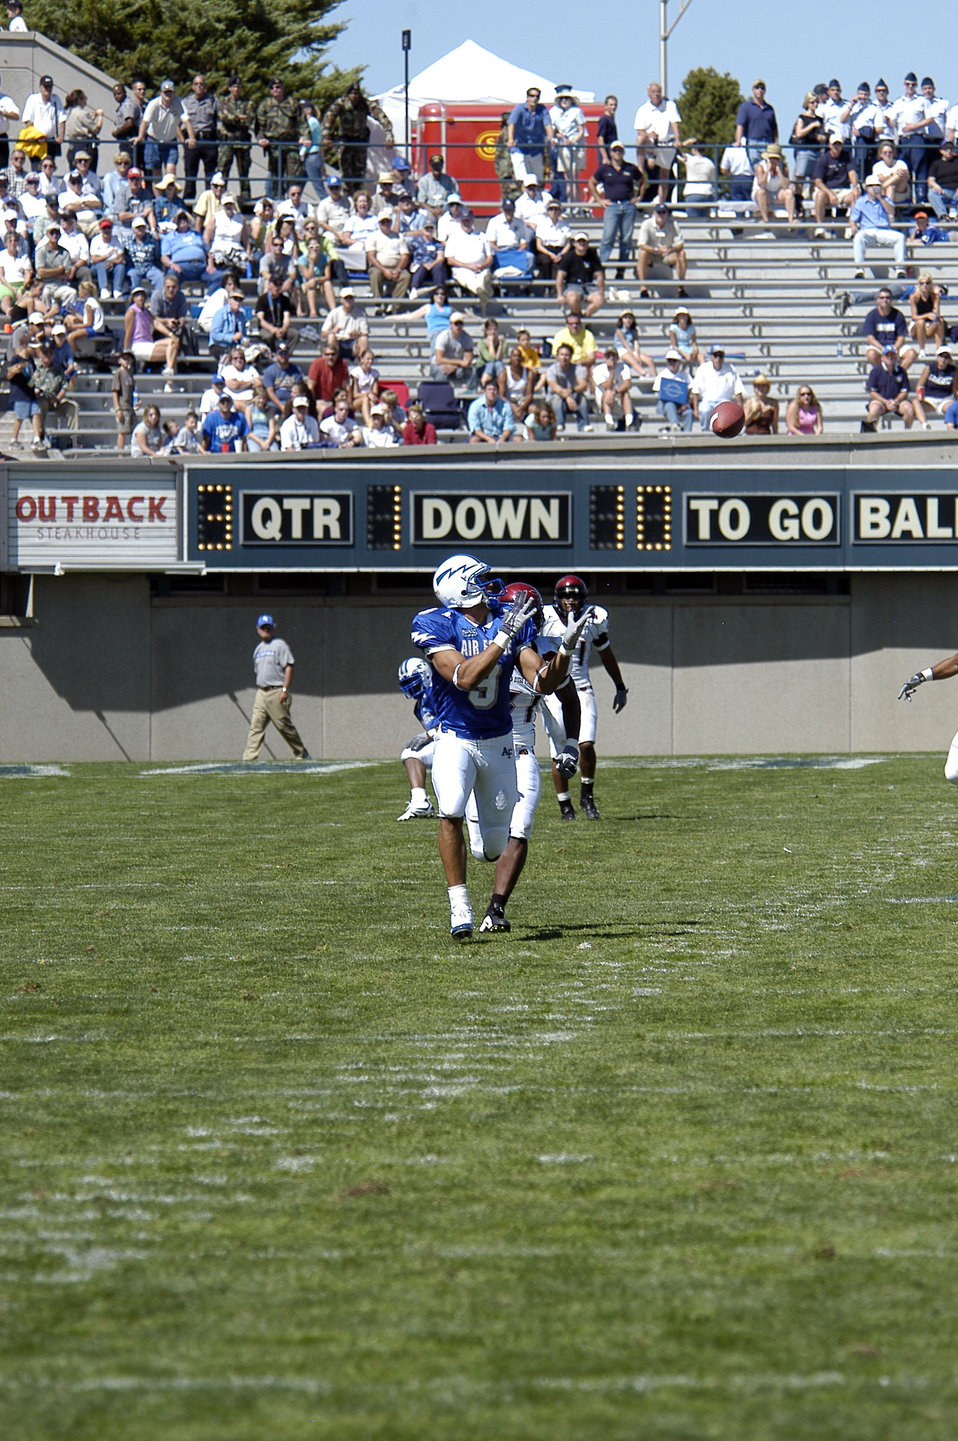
Falcons win

U.S. AIR FORCE ACADEMY, Colo. -- Falcon wide receiver Jason Brown settles under a pass from quarterback Shaun Carney after getting past a San Diego State University defensive back. The play, the longest of the game, went for a 61-yard completion before Brown fumbled out of bounds. The Falcons beat the Aztecs 41-29.